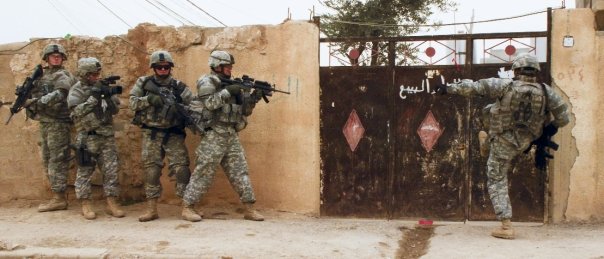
Air Force combat camera team discusses role of media in military

Senior Airman Michelle Revoir, shown here documenting events in Iraq in 2004, is an aerial combat videographer assigned to the 1st Combat Camera Squadron from Charleston Air Force Base, S.C.